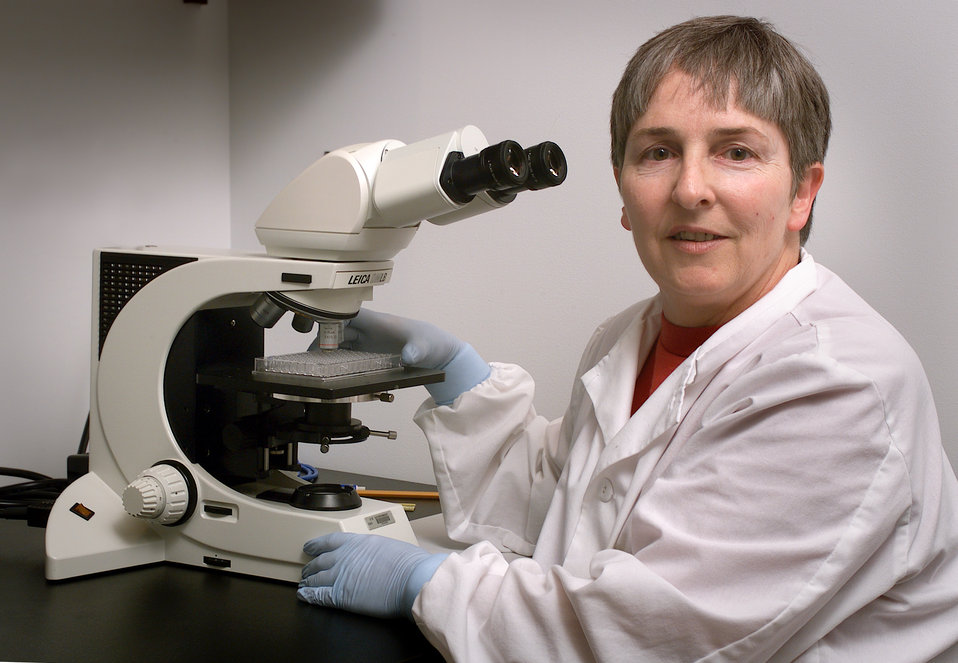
Sandra Bragg, Ph.D., of the Centers for Disease Control's Meningitis and Special Pathogens Branch (MSPB) in the National Center for Infectious Diseases (NCID), was shown seated in front of a microscope, as she was reading a Microscopic Agglutination Test (MAT) by using dark field microscopy.